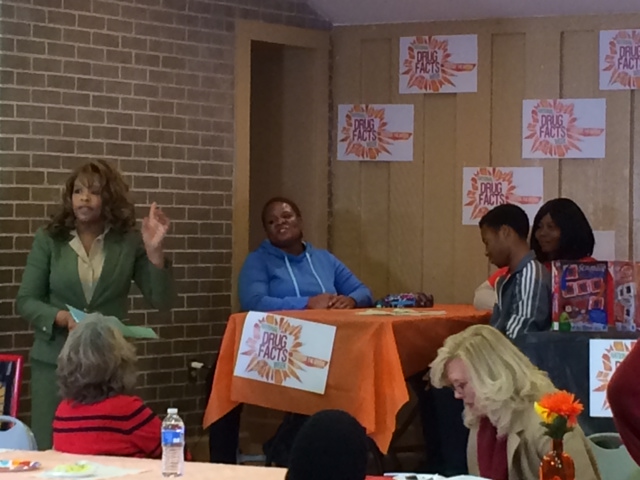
Taking A Standy during NDFW

Folks from Orlando, Florida are 'Shattering the Myths' during the 2014 National Drug Facts Week at Orlo Vista Park.